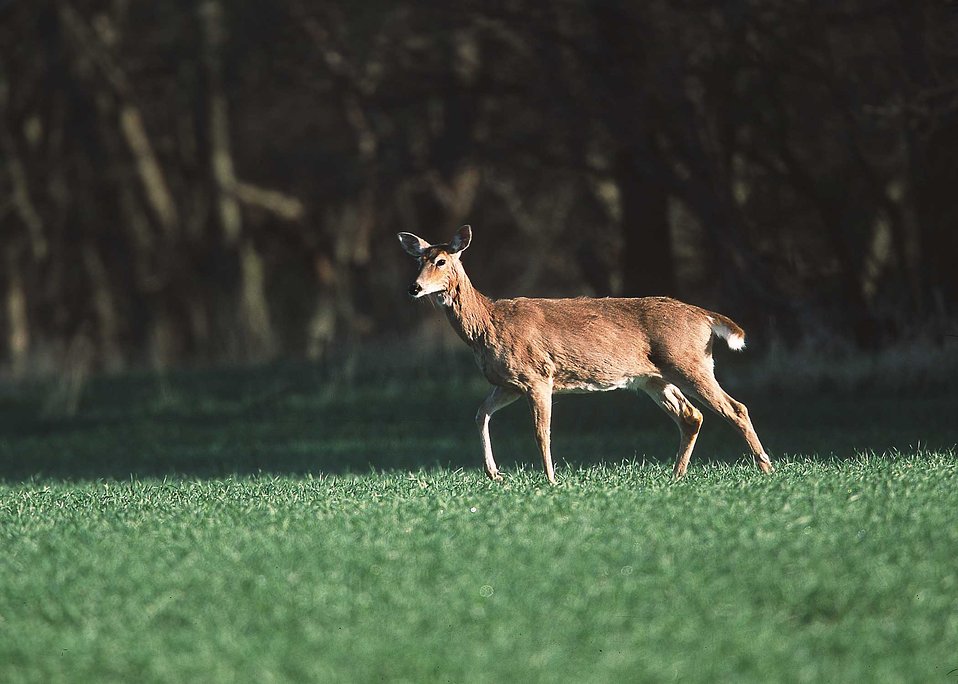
A white-tailed deer in a field

A white-tailed deer in a farm field in Manhattan, Kansas.